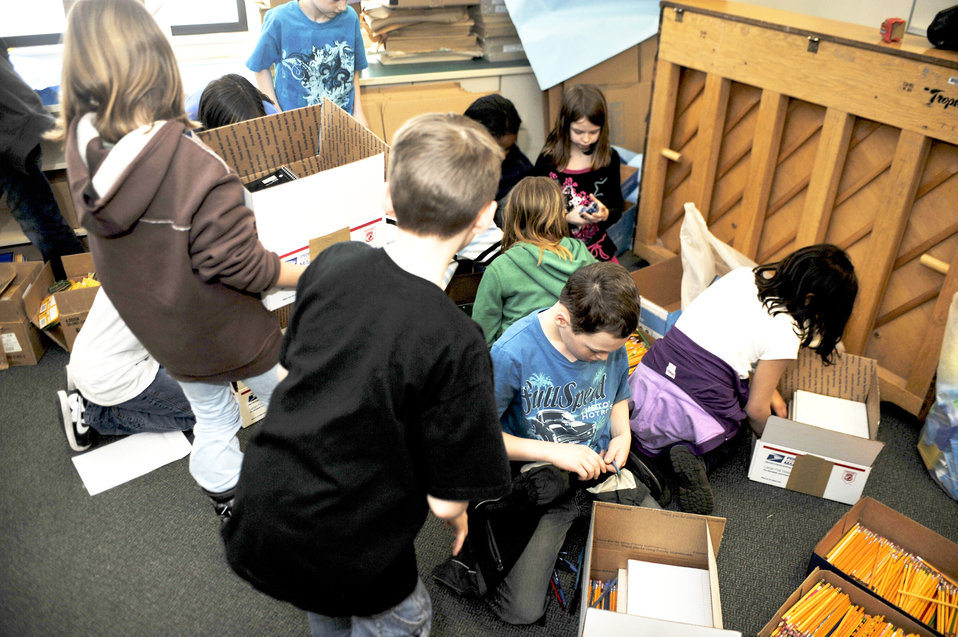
Elemendorf children lend helping hand

Students from Aurora Elementary School at Elmendorf Air Force Base, Alaska, work together to sort school supplies and pack them into boxes, Feb. 25, 2010, that will then be sent to students in Konar River Valley, Afghanistan.